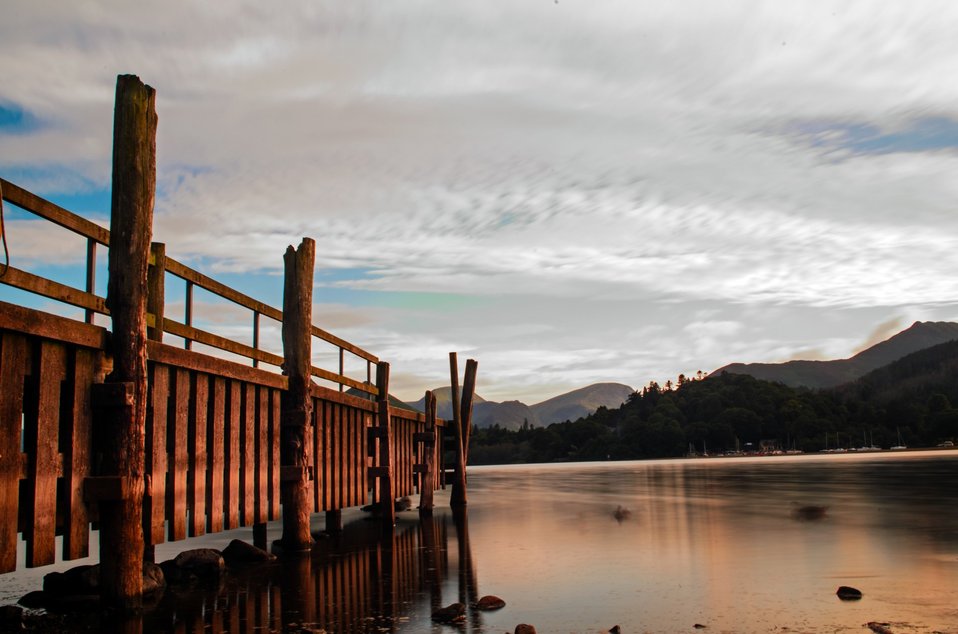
Pier on the water.